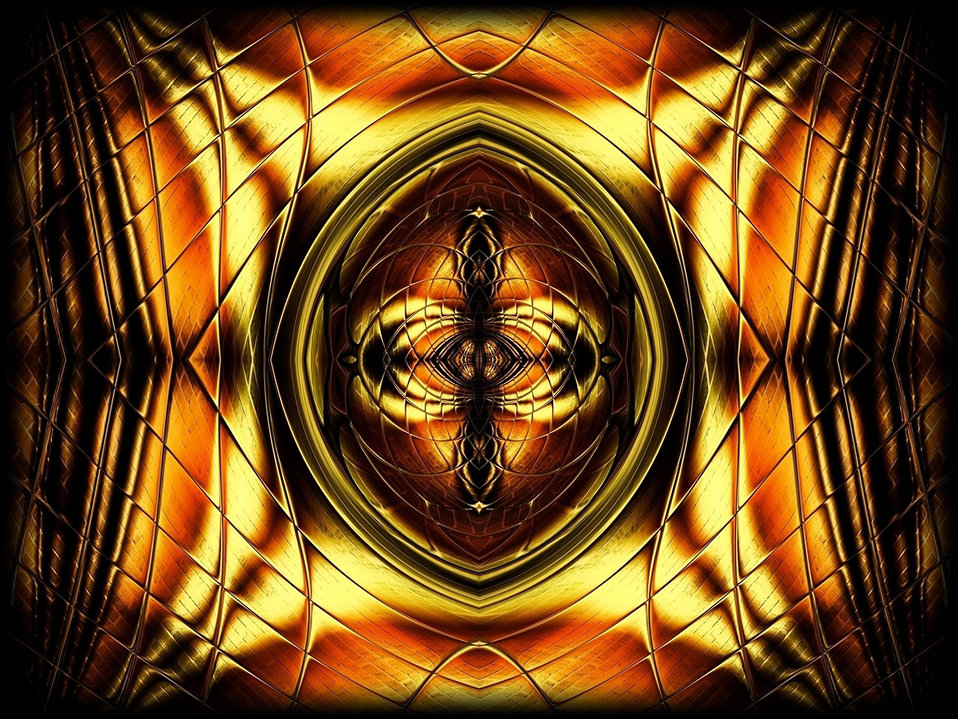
Glass tile background

Digital painting glass tile background.